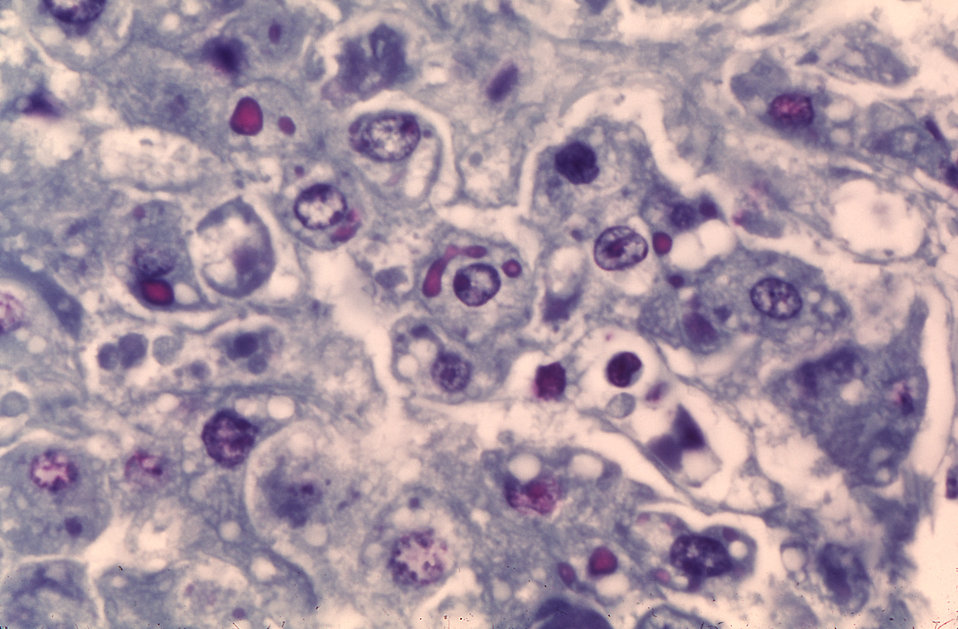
This micrograph reveals human hepatocytes infected with the Ebola virus, the cause of Ebola hemorrhagic fever (EHF).